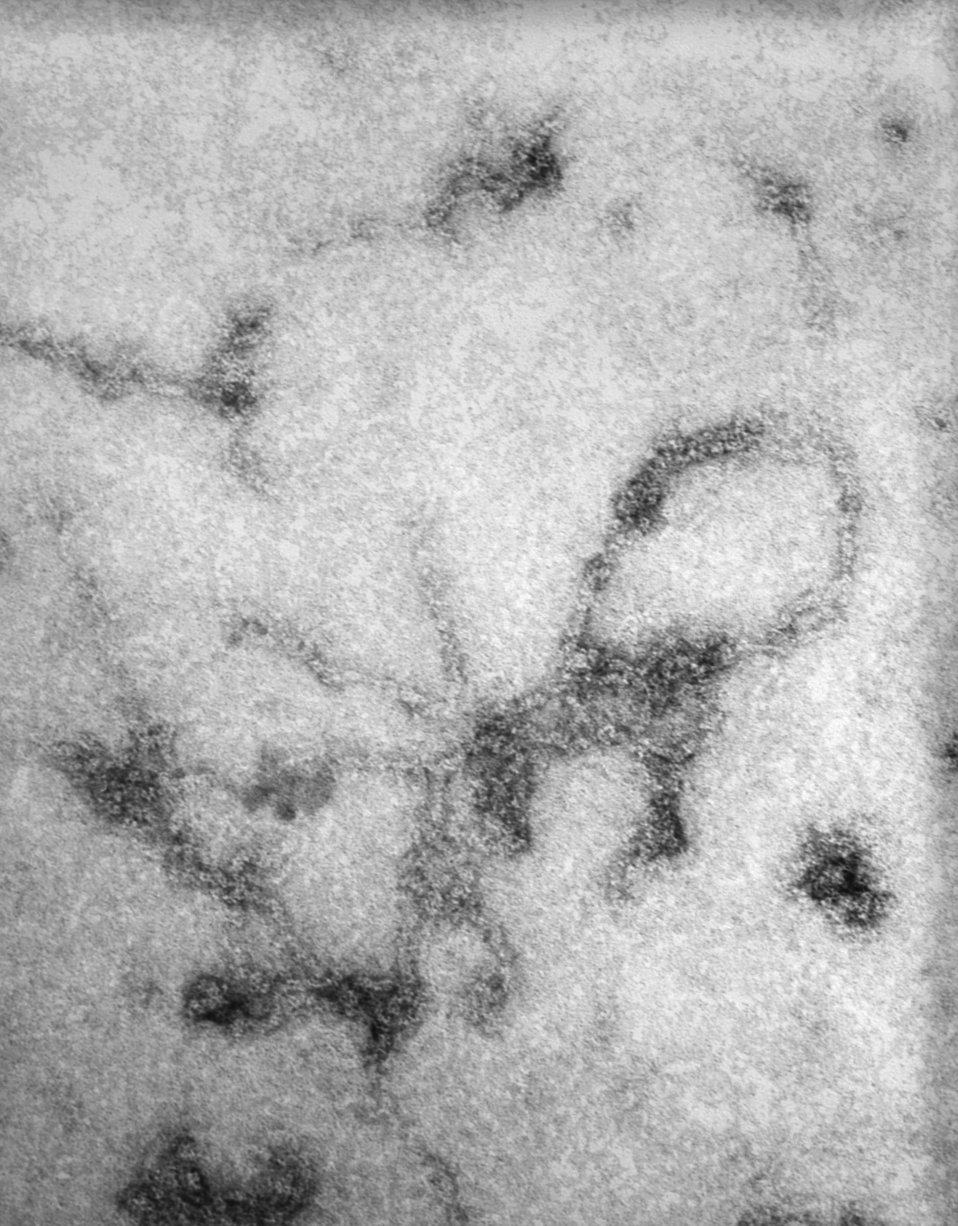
This negatively-stained transmission electron micrograph (TEM) revealed the presence of La Crosse (LAC) encephalitis virus ribonucleoprotein particles (RNP). LAC virus is a member of the Bunyaviridae virus family, California serogroup. This is an arbovorus, which means that transmission occurs through the bite of an infected arthropod, which in this case, is the treehole mosquito, Aedes triseriatus. LAC can also be transmitted through the bite of infected vertebrates including chipmunks and squirrels.